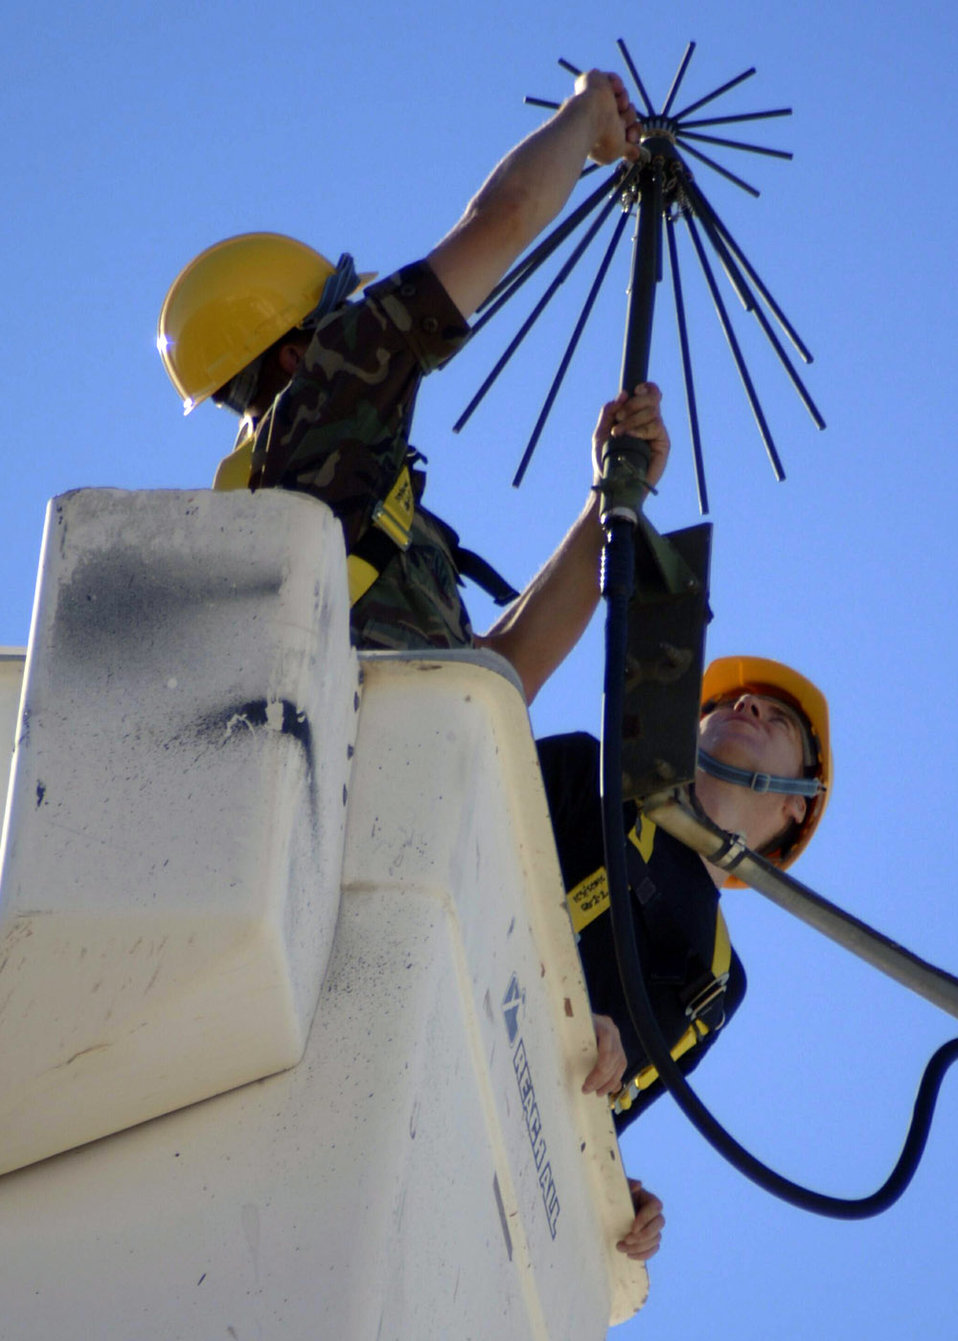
Checking it out

DAVIS-MONTHAN AIR FORCE BASE, Ariz. -- Staff Sgt. Jason Bulgin (left) tightens elements on an AT-197 UHF antenna here while Staff Sgt Albert Scharies observes. They are part of a team from the 1st Communications Squadron at Langley Air Force Base, Va., that visits here annually to inspect antenna arrays. The Airmen are cable/antenna maintainers.